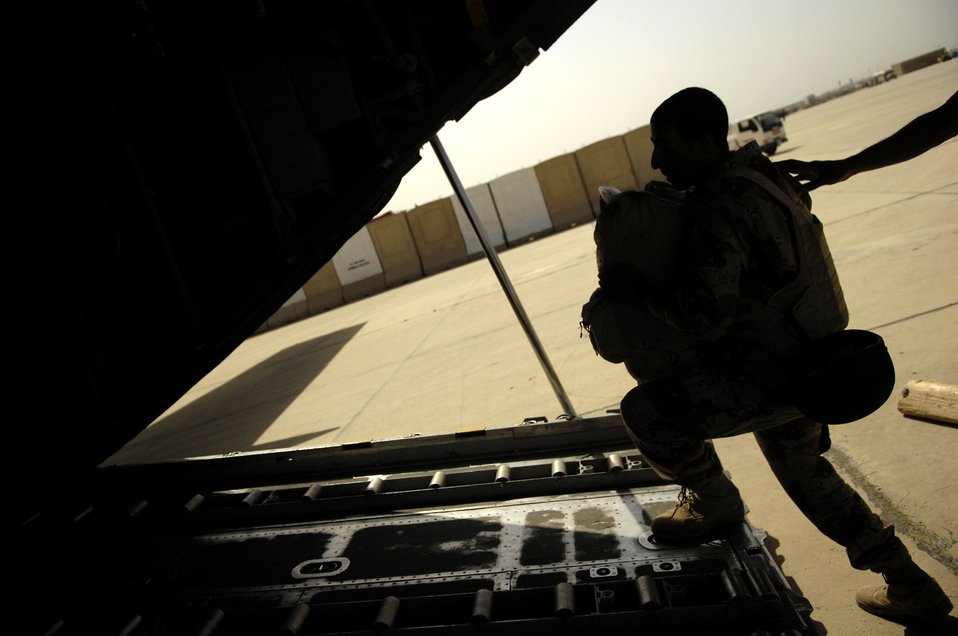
Iraqi air force in the fight

A member of the Iraqi army boards an Iraqi C-130 Hercules for a March 30 flight to Basra, Iraq, at New Al Muthana Air Base, Iraq. All processing, loading and transporting of the Iraqi troops is being conducted by the Iraqi air force.